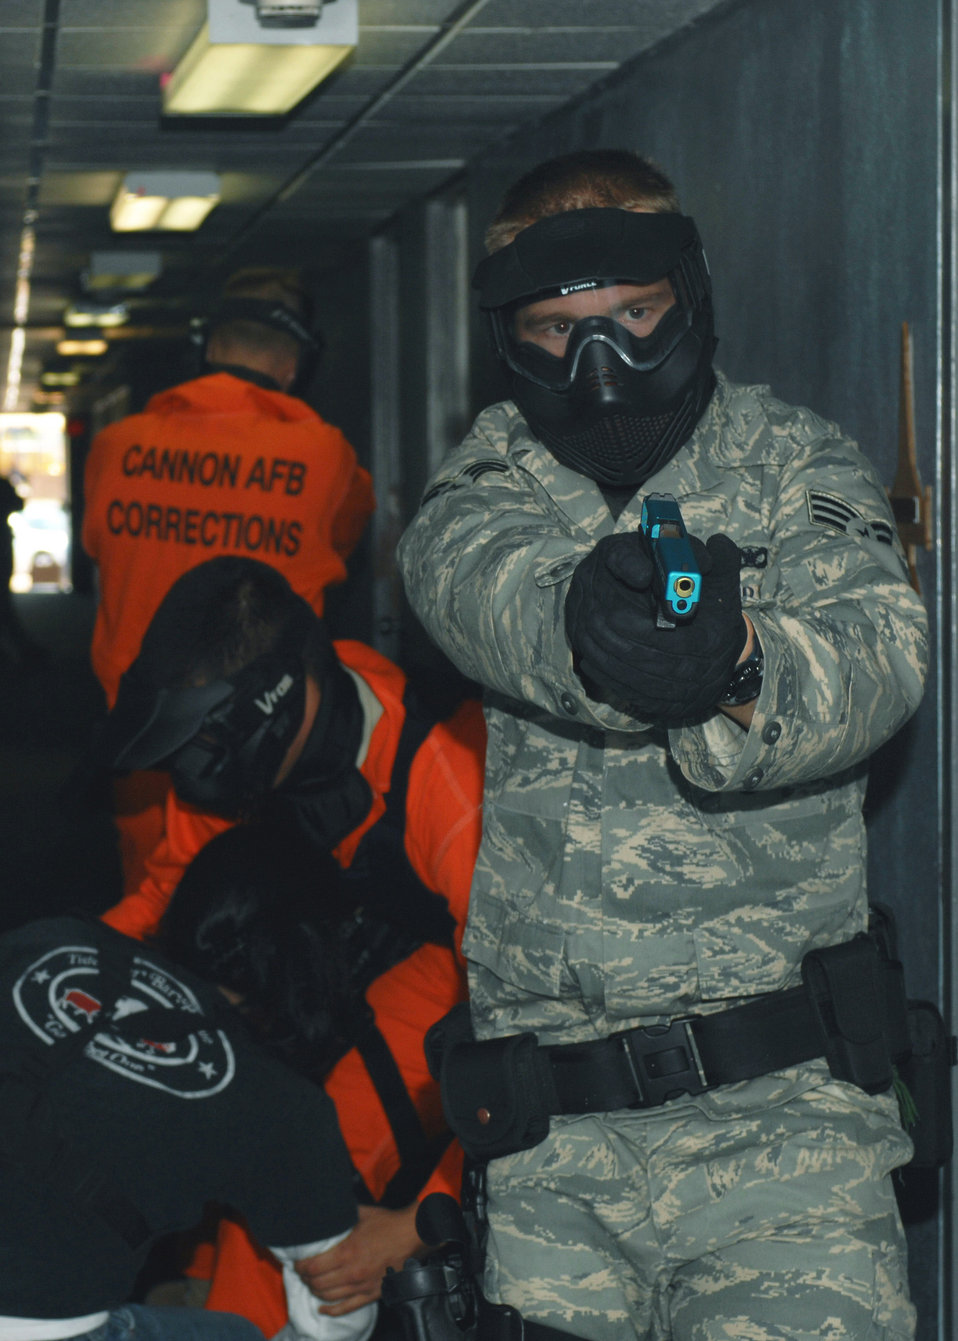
Joint Security Forces Training

Senior Airman Joshua Jacobson is helped to safety by the rest of his four-man team during a training course May 7 at Cannon Air Force Base, N.M. The three-day Patrol Response to Active Shooter course is taught by National Tactical Officers Association members. Airman Jacobson is assigned to the 27th Special Operations Security Forces Squadron.